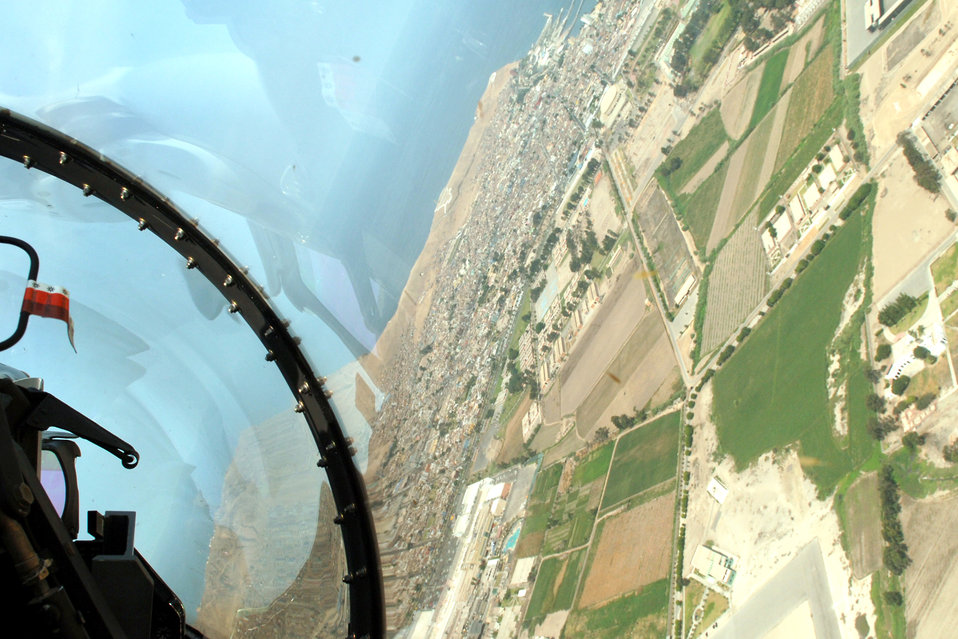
Airmen work alongside Peruvian military during joint exercise

An F-16 Fighting Falcon Utah flies over Lima, Peru, on its way to the city for a joint air show with the Peruvian Air Force. The Peruvian air show will be the first of the year for aircraft from the 12th Air Force and Air Forces Southern. The F-16 is from the 34th Fighter Squadron at Hill Air Force Base, Utah.